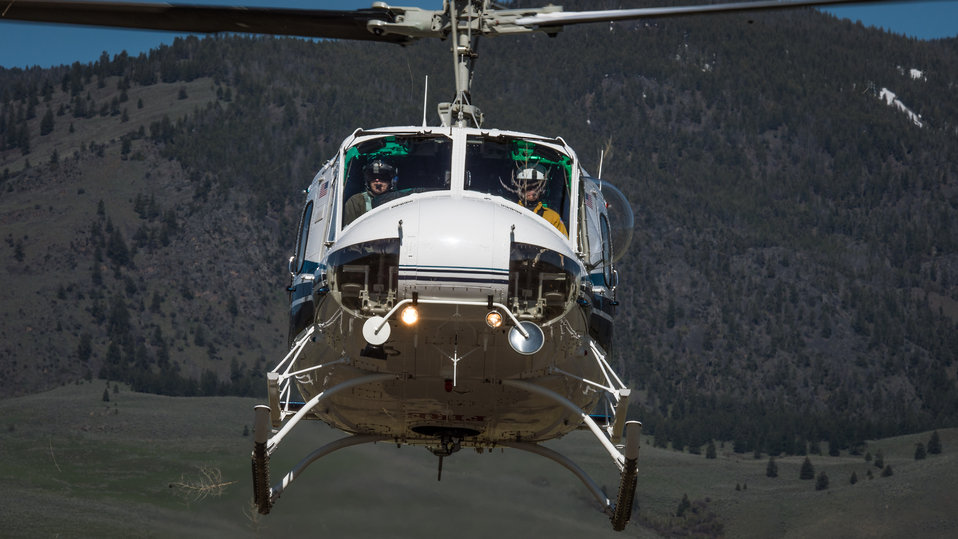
Idaho Helicopters, Inc., Assistant Chief Pilot JT Theis (right) lands a Bell 205A-1 helicopter for veteran wildland firefighter rappellers to board for training at the U.S. Department of Agriculture (USDA) U.S. Forest Service (USFS) National Helicopter Rappel Program’s Rappel Academy at Salmon Air Base in Salmon, ID on Wednesday, May 14, 2014. From May 12, 2014, 72 veteran rappellers from all over the nation, 30 support staff, and three helicopters with flight crews attend the training at Salmon Air Base. Participants will rappel into the Perreau Creek area. The annual training is delivered in accordance with the National Rappel Operations Guide; strengthen leadership, teamwork, and communications within the rappel community, and produces quality aerial delivered firefighters for use in fire and aviation operations. The USDA Forest Service National Helicopter Rappel Program’s primary mission is initial attack. Rappel crews may be utilized for large fire support, all hazard incident operations, and resource management objectives.